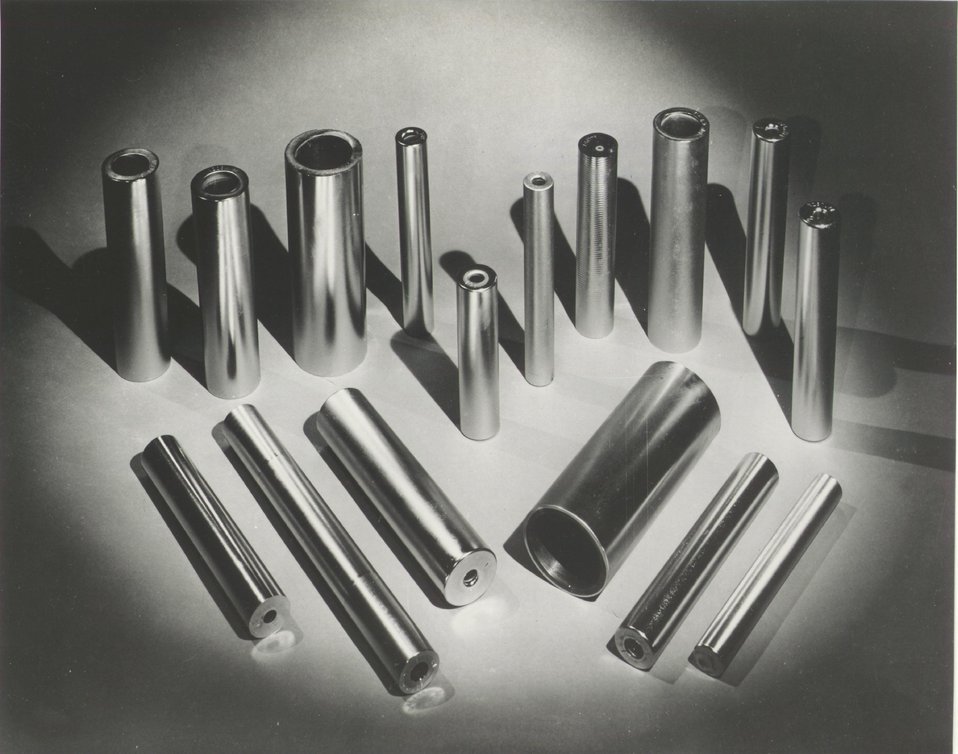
Some of the machined uranium shapes at the Feed Materials Production Center, operated by the National Lead Company of Ohio. c. 1967